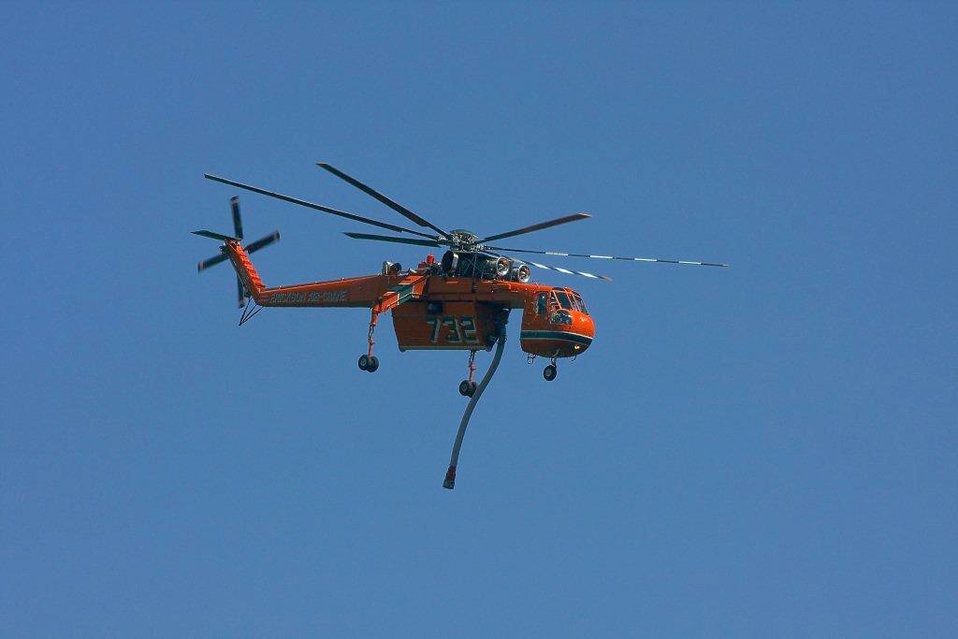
A skycrane leaves fire area to refill with water to use against the Power Fire in California. The Power Fire in the Stanislaus National Forest near Beardsley Reservoir in California began on Aug. 5, 2013 is under investigation. The fire has consumed 881 acres and is 32% contained.